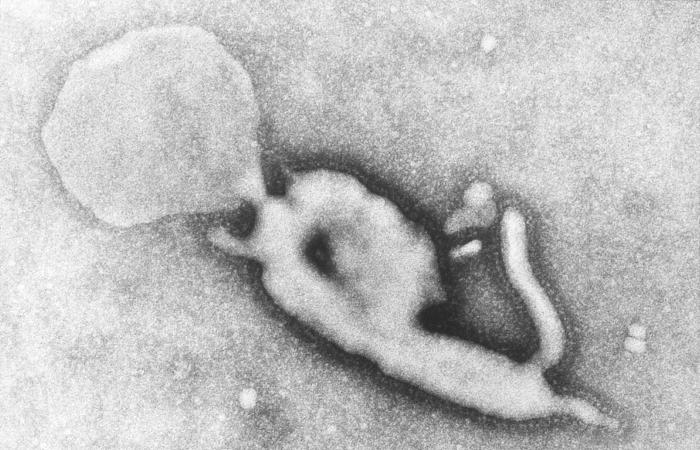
This transmission electron micrograph (TEM) revealed some of the ultrastructural morphologic features displayed by an Ebola virion discovered from the Democratic Republic of the Congo, formerly known as Zaire.